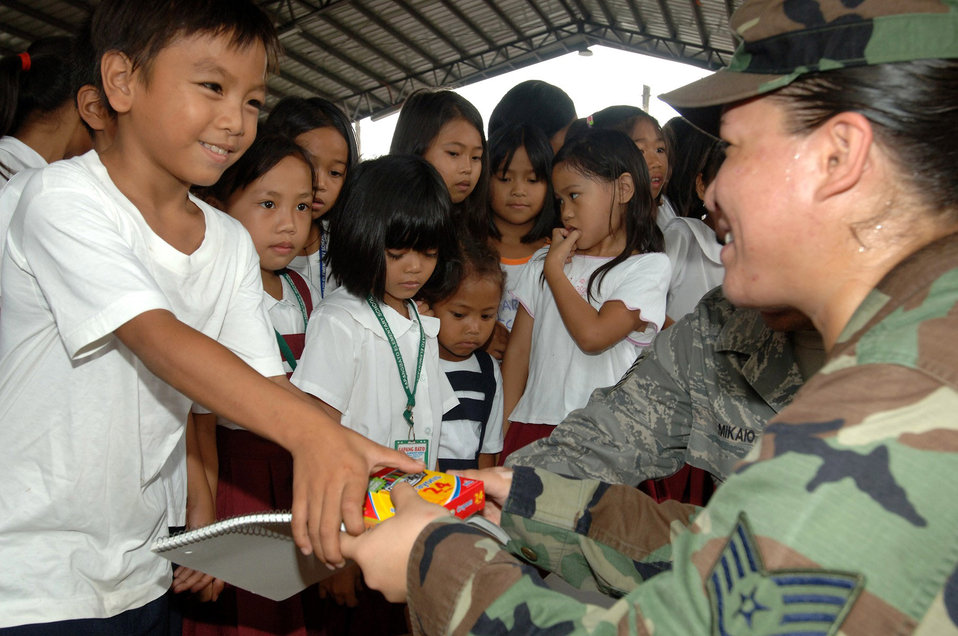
Airmen spread goodwill during Balikatan 2009

Airmen participating in Exercise Balikatan 2009 donated school supplies and athletic equipment to Filipino children from the Sapangbato village community center as part of a volunteer community relations event held April 24 and 25 at Angeles City, Philippines.